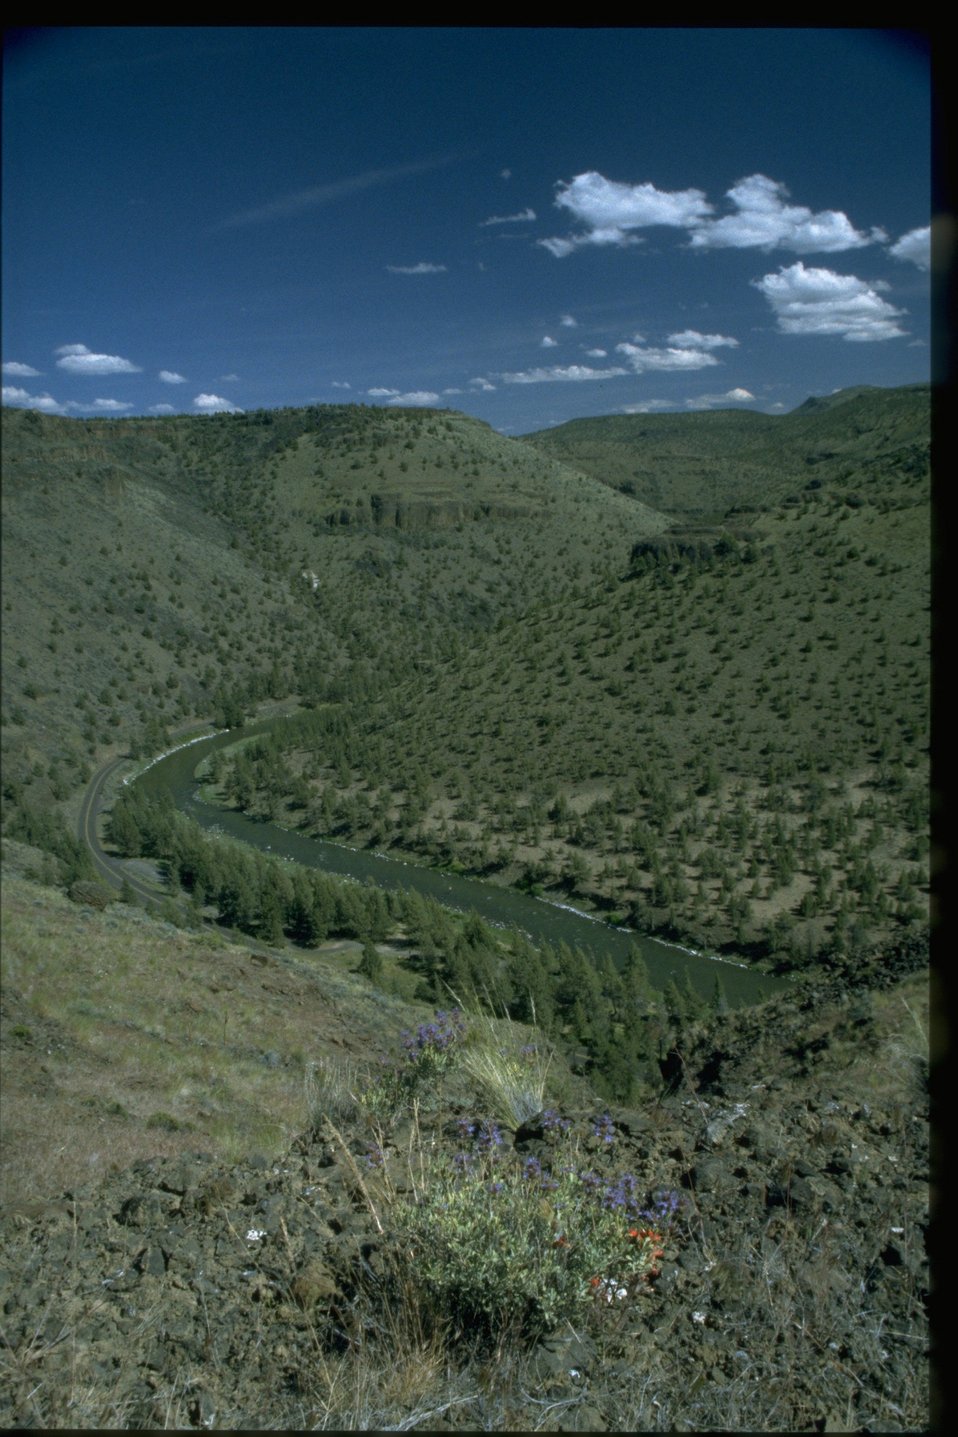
Lower Crooked Wild and Scenic River from Chimney Rock Trail.